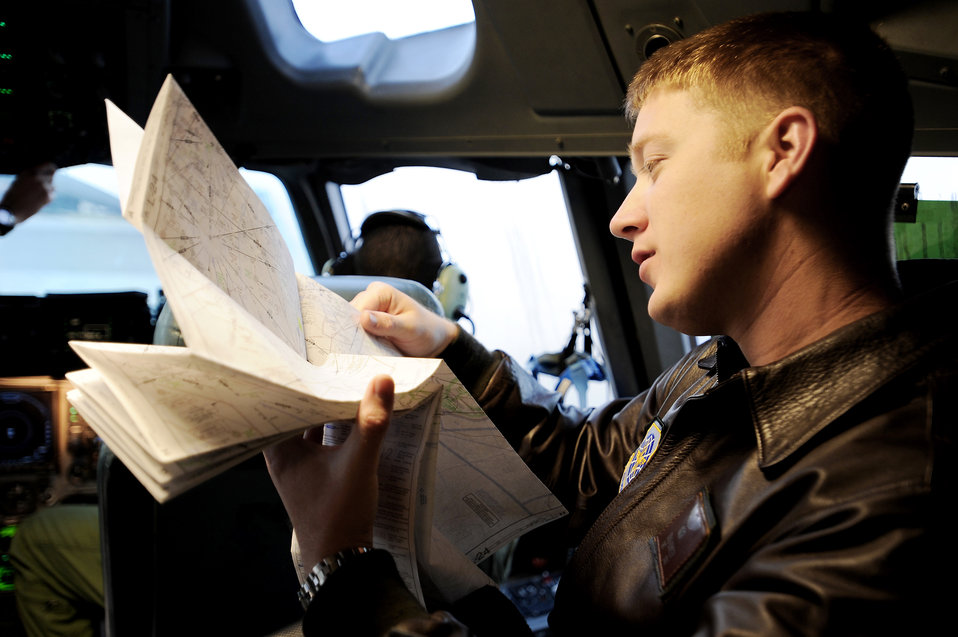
Charleston crew flies evaluation mission

Capt. Brad Bowyer reviews his maps and flight plan in preparation for takeoff aboard a C-17 Globemaster III Feb. 4, 2010, at Joint Base Charleston, S.C. The mission was flown as part of an evaluation to keep aircrew skills sharp. Captain Bowyer is a pilot with the 17th Airlift Squadron.